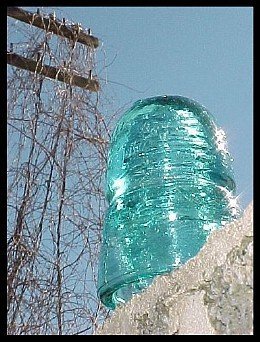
A sparkling CD145 or 'Beehive' insulator - from the telegraph era. Made by the Brookfield Glass Company circa 1882 yet affordable at an approximate price of $2.00 Author:Lee Brewer; Source: Picture taken by Lee Brewer:This image may be used by anyone for any purpose.